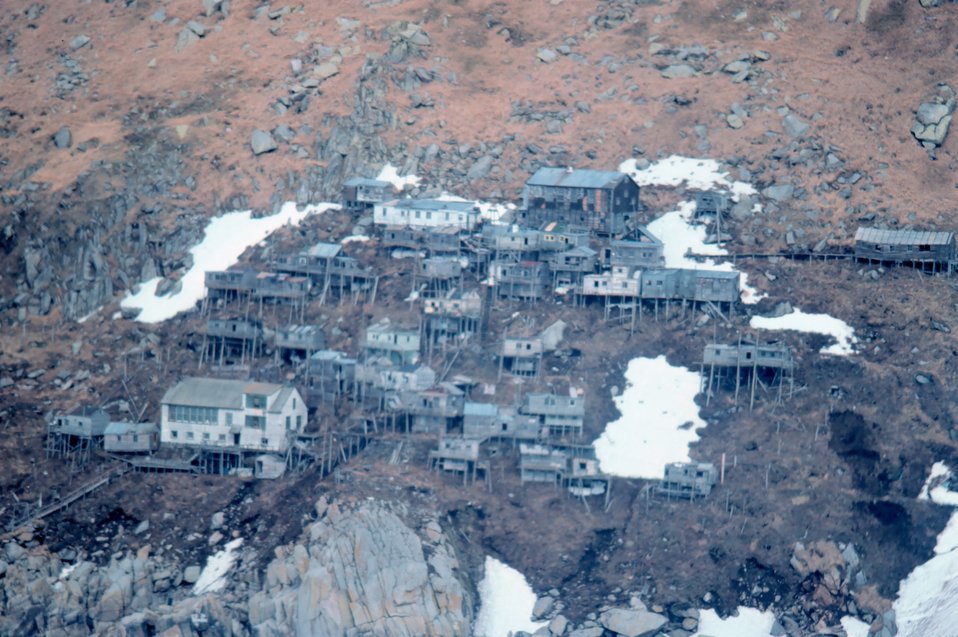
The stilt village of Ukivok - this is now deserted.